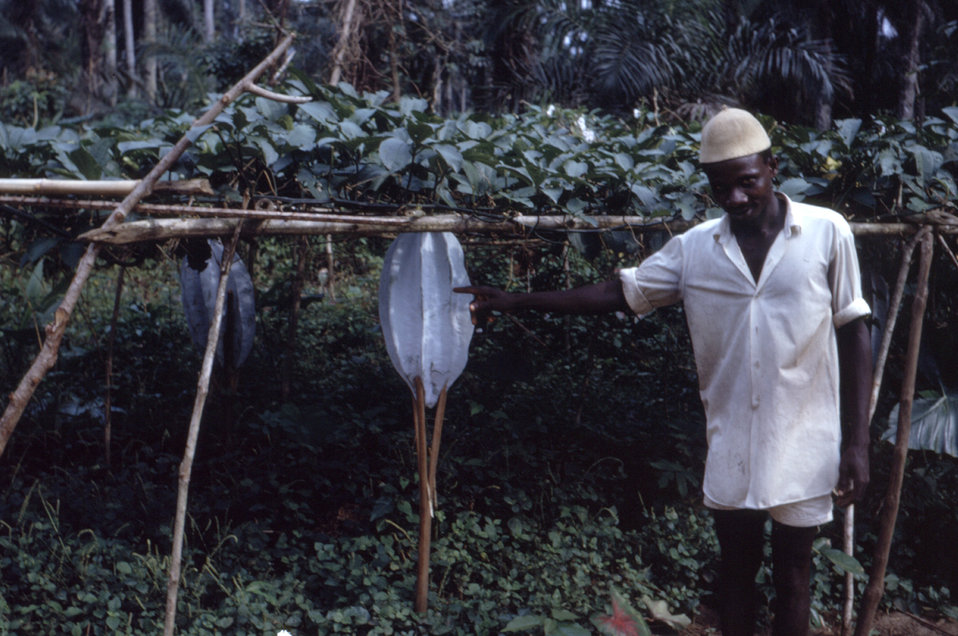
This 1968 Biafran war-time photograph showed a Nigerian man pointing to a hanging fluted pumpkin, Telfairia occidentalis, which was resting on a trellis.